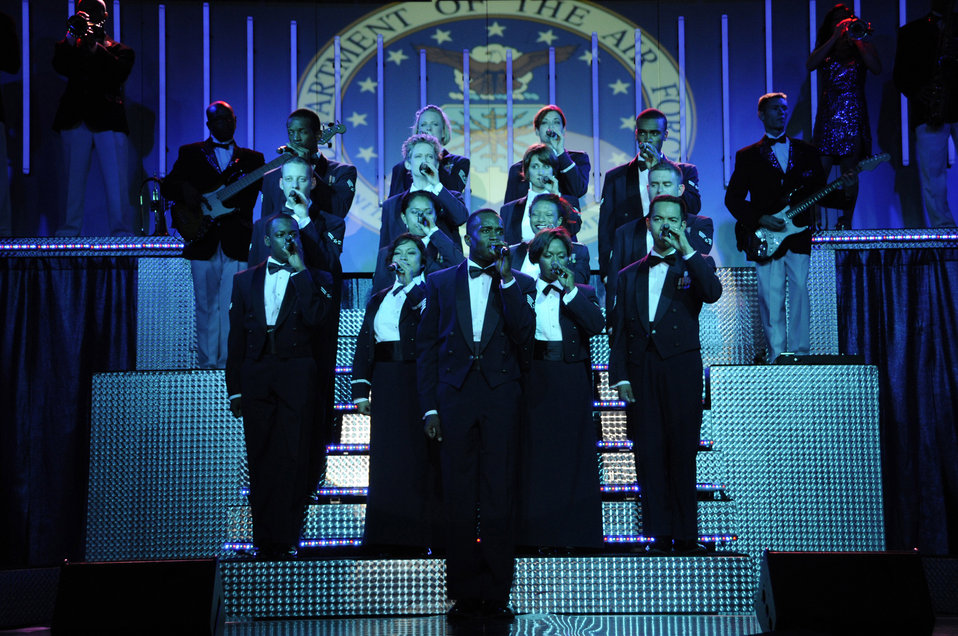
Singing the Airman's Creed

Tops in Blue vocalists ended their performance singing the Airman's Creed Oct. 2 at Lajes Field, Azores. Tops in Blue perform for military personnel and their families worldwide.